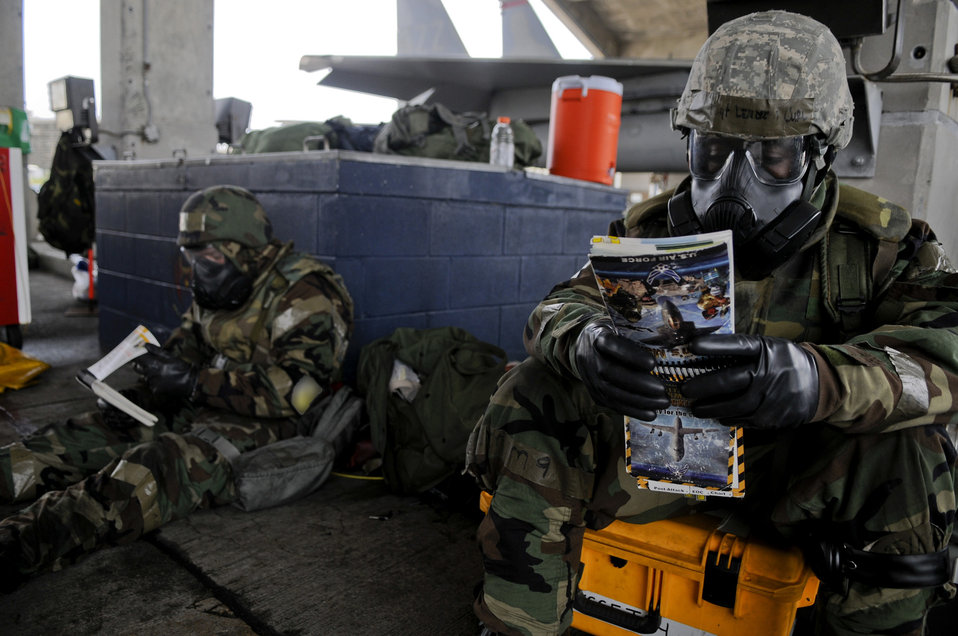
Hitting the books

Tech. Sgt. Lendrea Curl (right) and Airman 1st Class Kevin Buff consult Airman's Manuals May 19, 2011, during an operational readiness exercise at Kadena Air Base, Japan. Sergeant Curl is assigned to the 18th Aircraft Maintenance Squadron. Airman Buff is assigned to the 67th Aircraft Maintenance Unit.